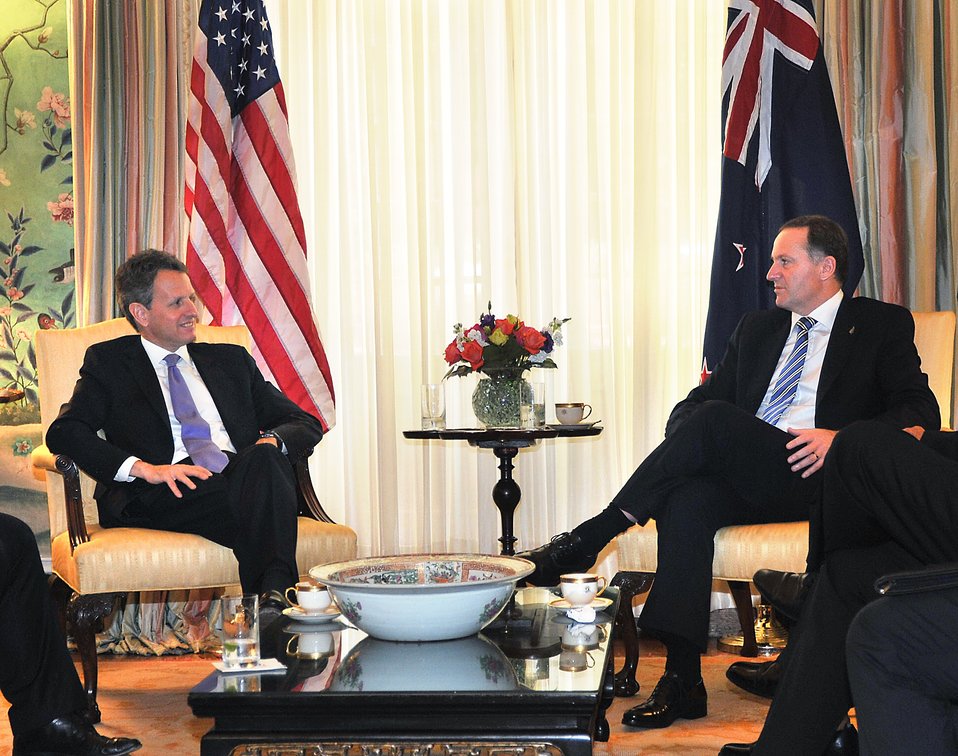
New Zealand Prime Minister John Key

On Thursday, July 21, 2011, Treasury Secretary Tim Geithner met with New Zealand Prime Minister John Key at Blair House.